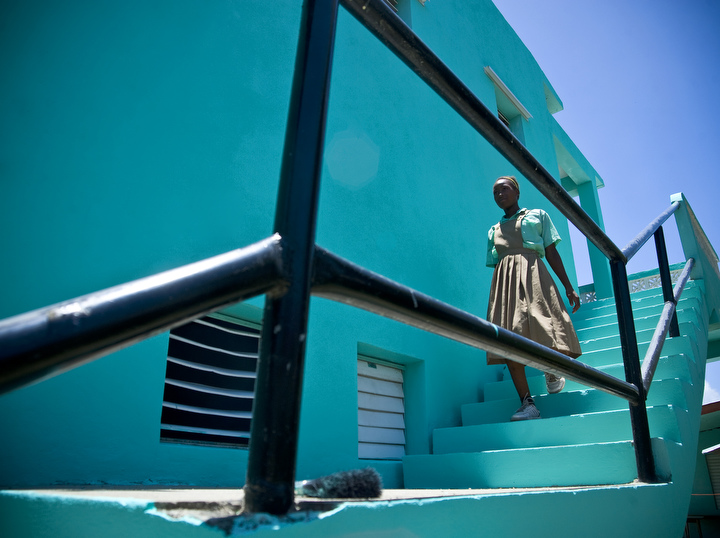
Operation Southern Partner paints a brighter future in Belize

A young school girl makes her way down freshly painted stairwell at the Stella Maris School for the Physically Disabled June 8 in Belize City, Belize. Airmen deployed here for Operation Southern Partner spent the day painting the school exterior.